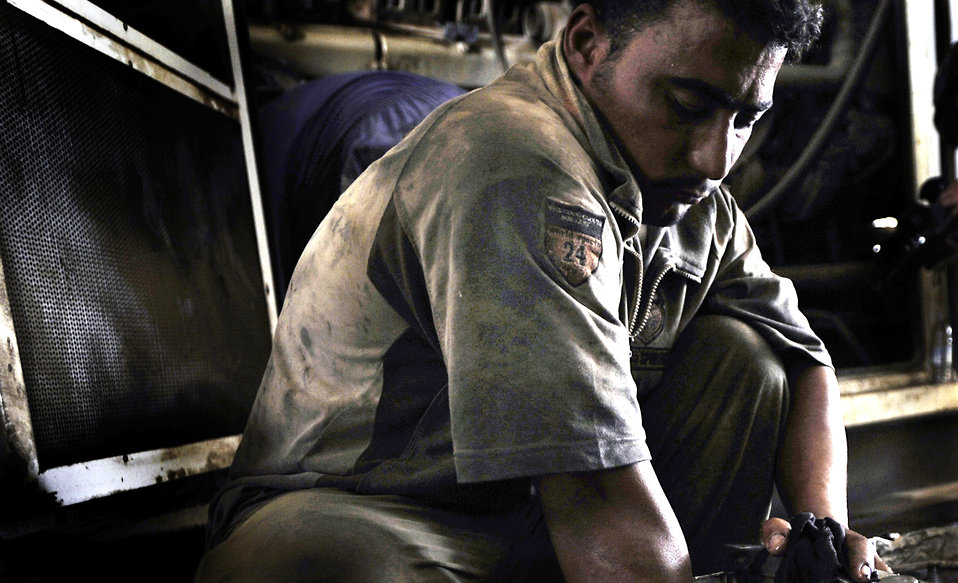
Airmen help Iraqi army take control of base operations

An Iraqi contractor works on a generator that helps power Camp Ur, an Iraqi military base, near the city of An Nasiriyah Aug. 17, 2009. Camp Ur is supported by members of the Tallil Logistics Military Advisory Team who advise the Iraqis on base operations.